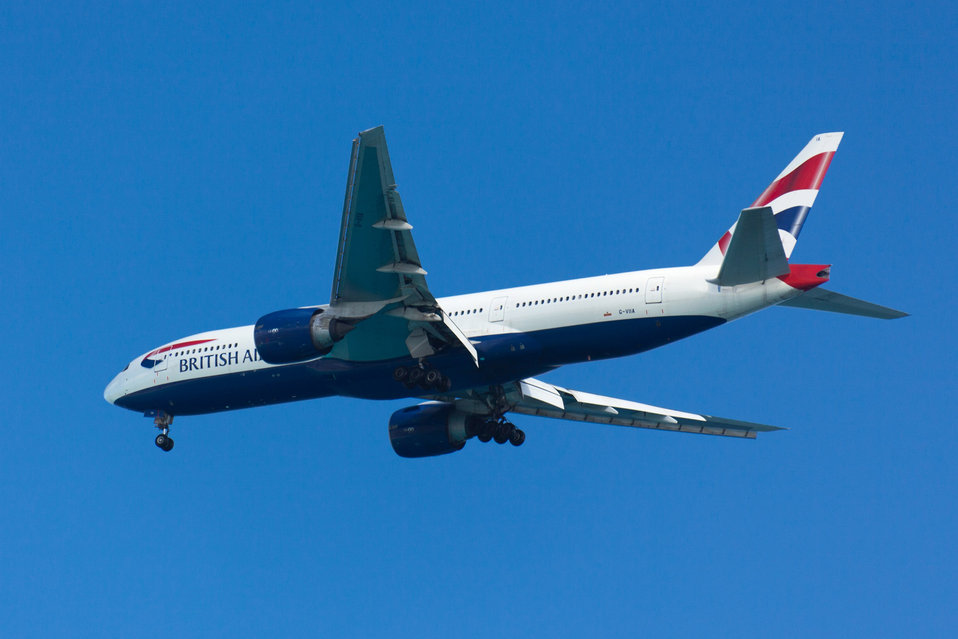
Airplane in the sky

British airways airplane in the blue sky.